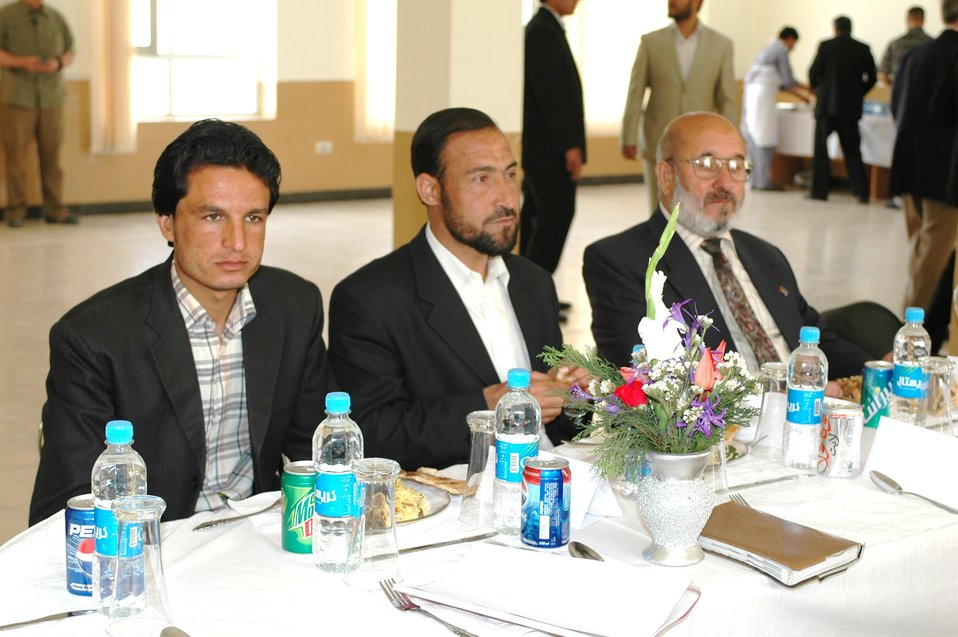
Dr Shah Visits Votech in Kabul